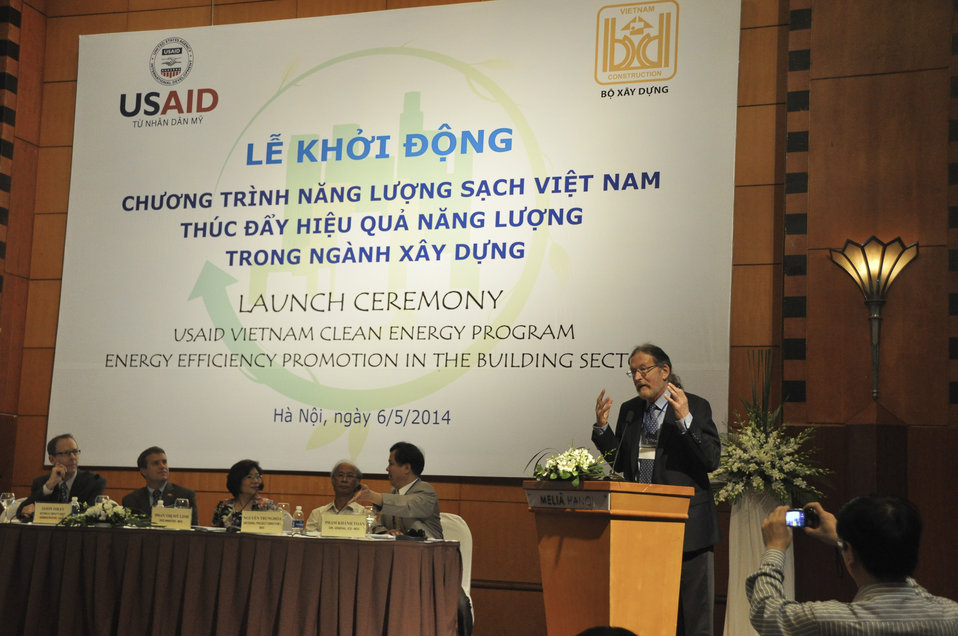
Launching of USAID Vietnam Clean Energy Program.

Hanoi, May 6, 2014.